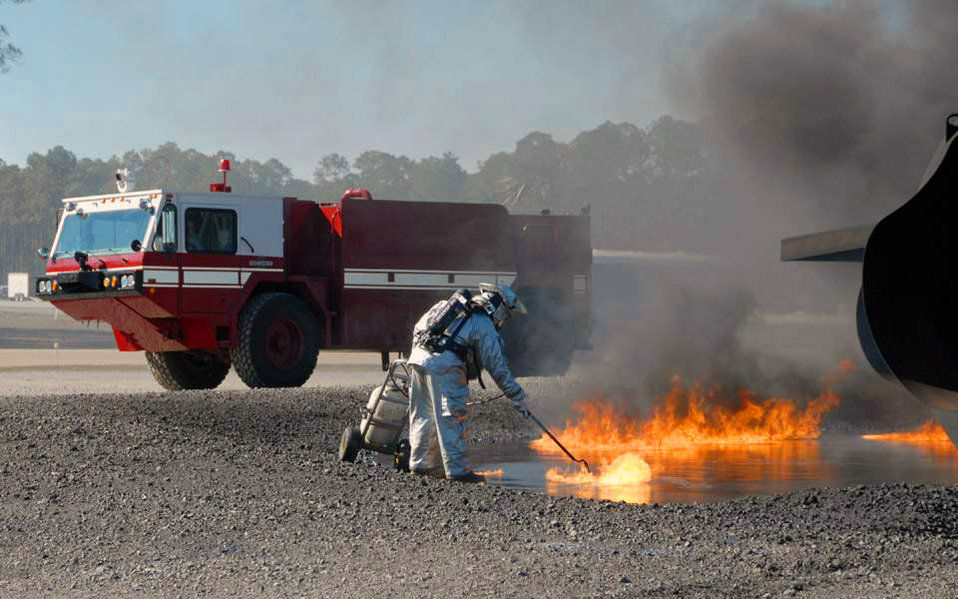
Succeeding at Silver Flag

A military firefighter ignites fuel in a fire pit to start a live fire training exercise conducted during a Silver Flag exercise Feb. 4. Silver Flag exercise is an annual training exercise conducted at Tyndall Air Force Base, Fla., to train military personnel within their career fields.